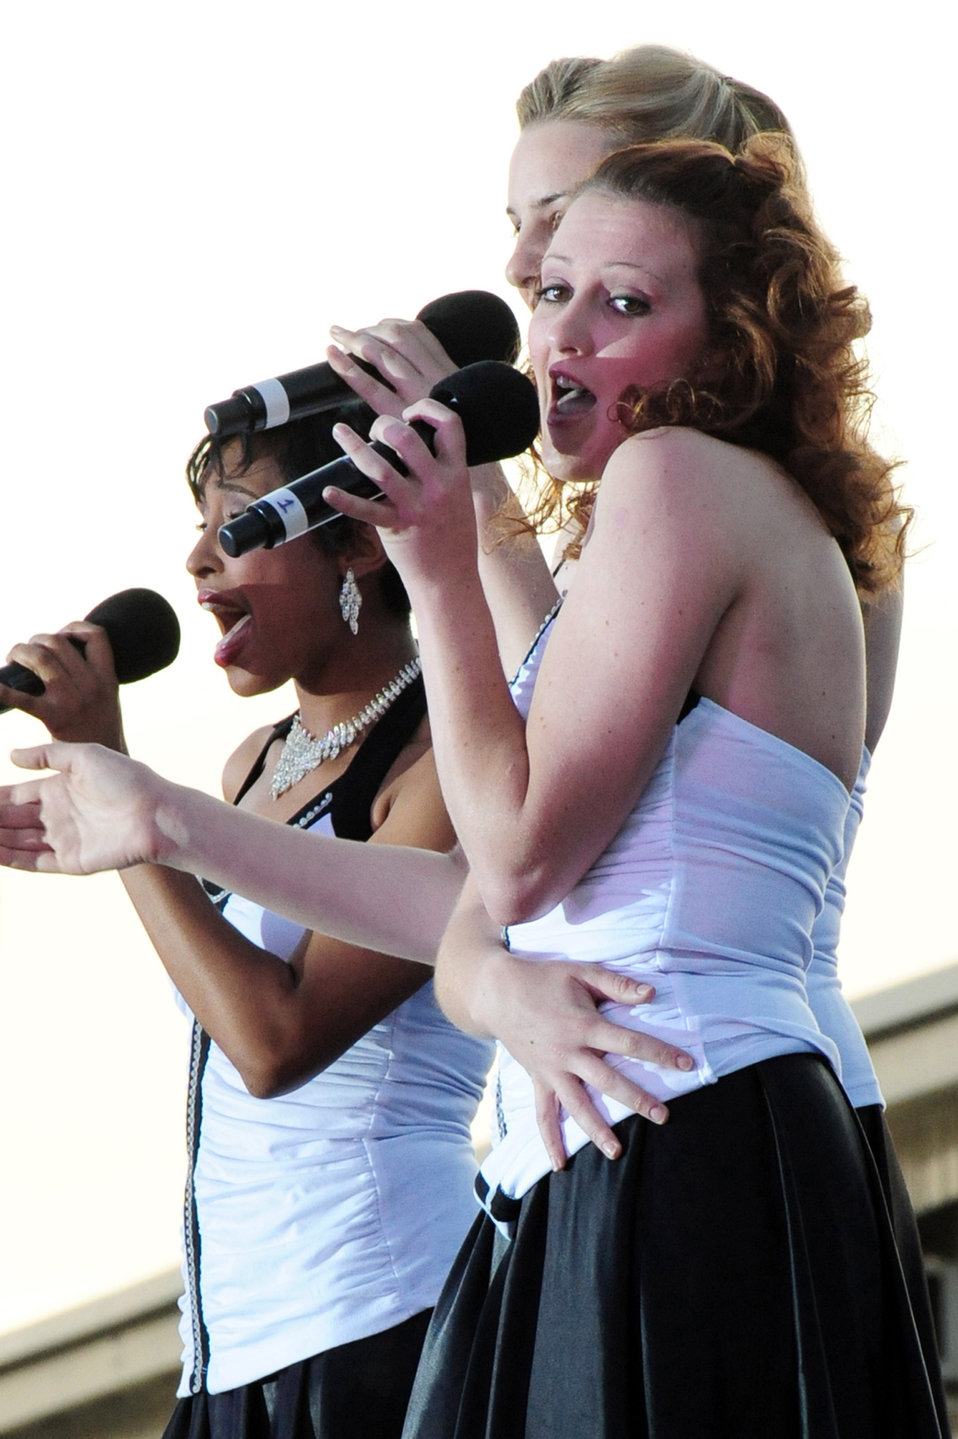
Tops In Blue entertain deployed forces in Kyrgyzstan

Airman 1st Class Sheila Smith performs with Tops In Blue July 9 at Manas Air Base, Kyrgyzstan. Airman Smith is a 3rd Equipment Maintenance Squadron crew chief stationed at Elmendorf Air Force Base, Alaska, and is originally from Richmond, Va.